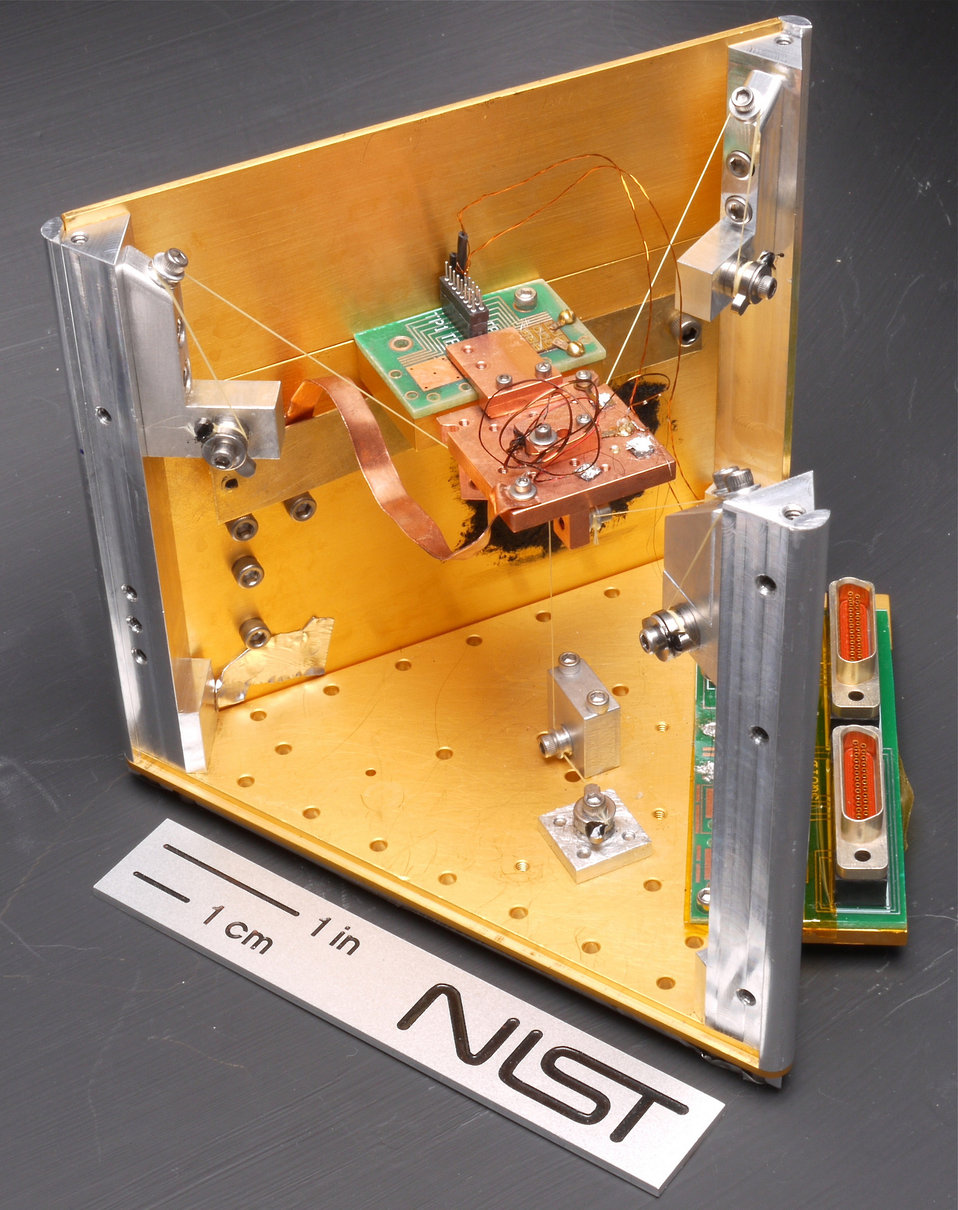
Refrigerator

NIST's prototype solid-state refrigerator uses quantum physics in the square chip mounted on the green circuit board to cool the much larger copper platform (in the middle of the photo) below standard cryogenic temperatures. Other objects can also be attached to the platform for cooling.